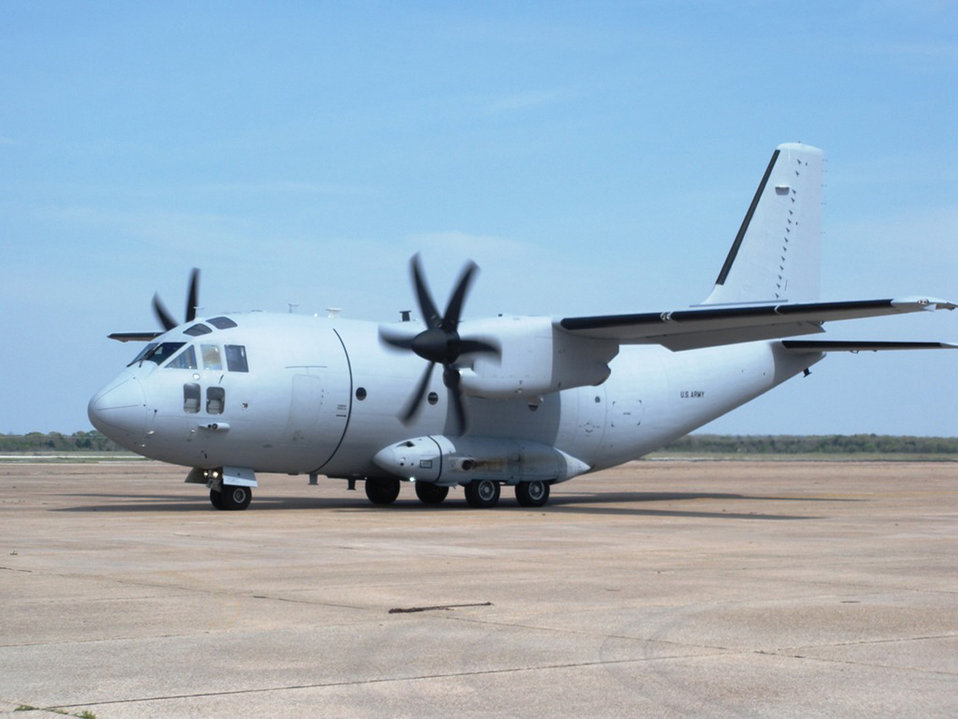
National Guard to fly C-27Js

A C-27J Spartan taxis on the ramp at Redstone Arsenal, Ala., during flight testing in early 2009. Air Force officials plan to add 38 C-27Js to its inventory, which will be operated by the Air National Guard.